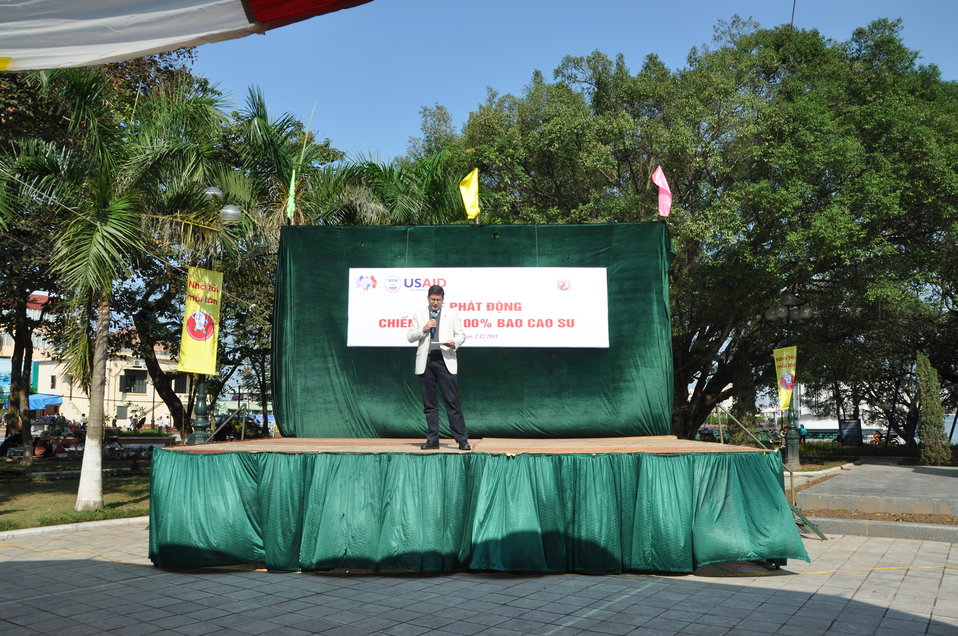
100% Condom Use Campaign Launch, Dec. 2, 2011